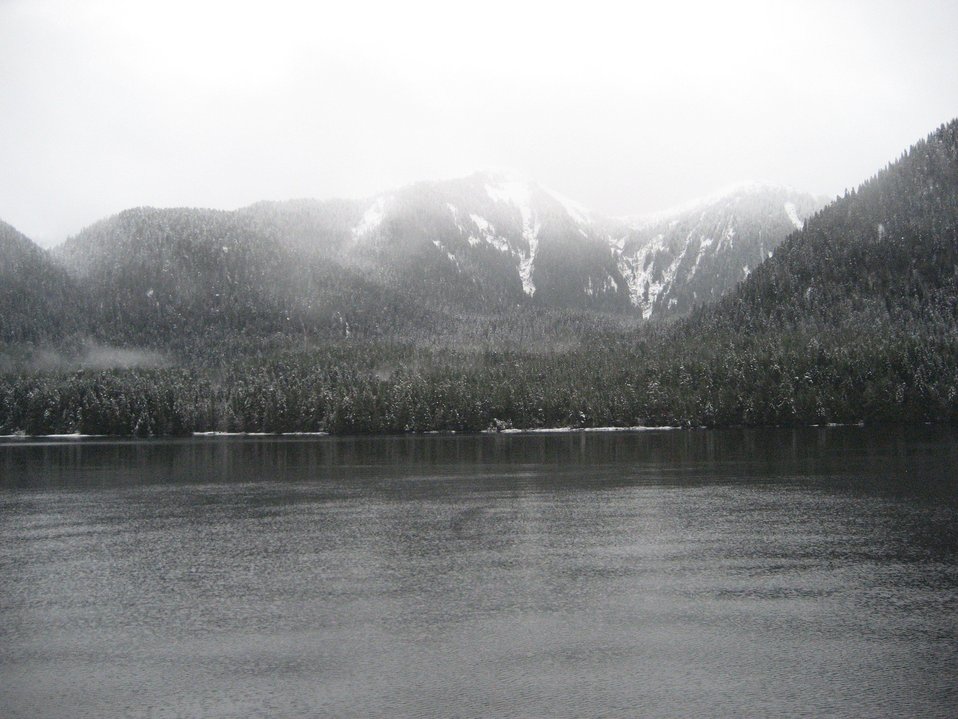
Icy Strait area. A sprinkling of snow.